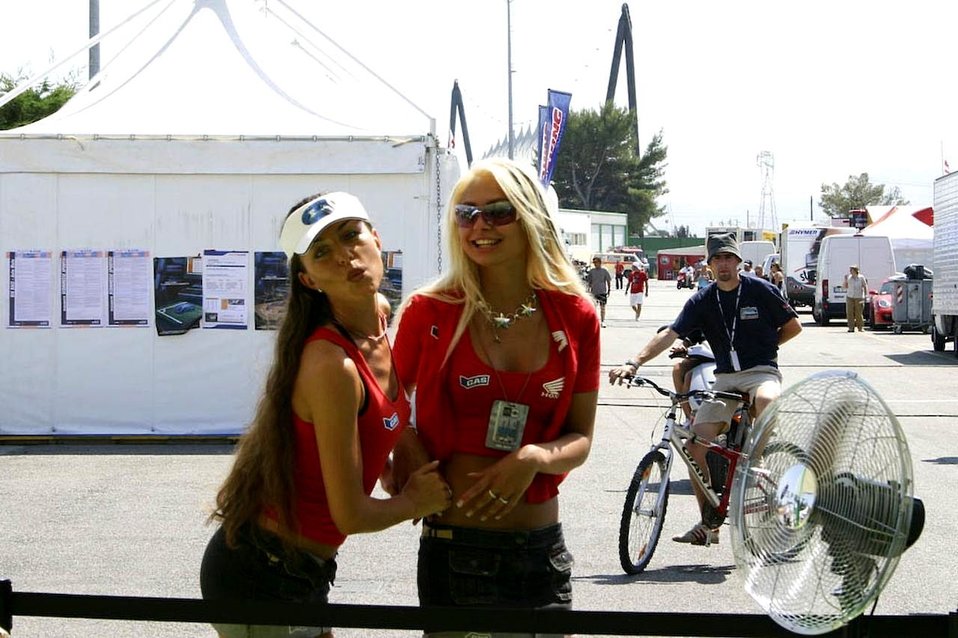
English:
Image title: Beautiful girls Image from Public domain images website, http://www.public-domain-image.com/full-image/people-public-domain-images-pictures/female-women-public-domain-images-pictures/beautiful-girls.jpg.html